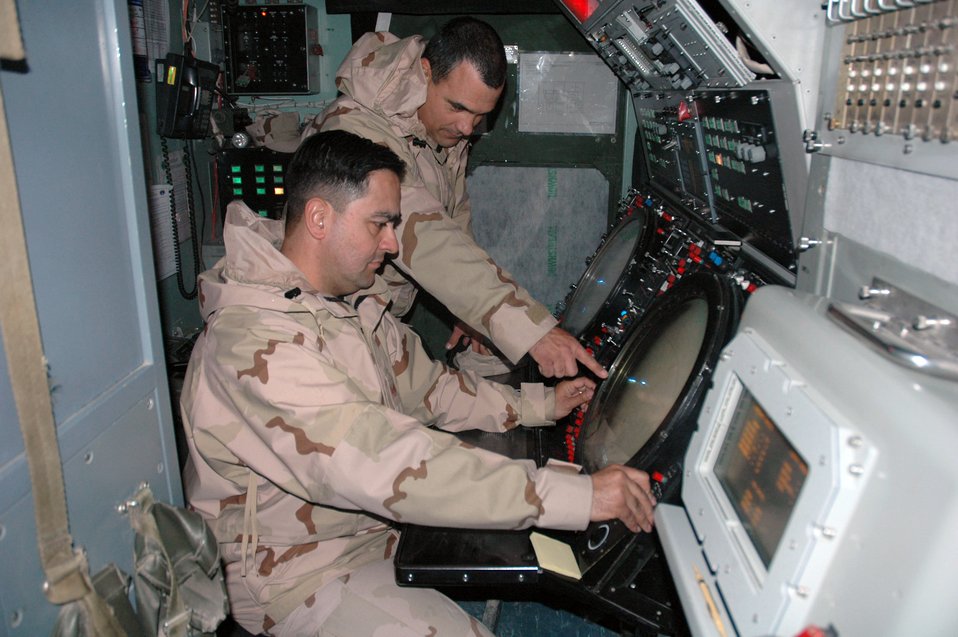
Kingpins use blend of old, new technology

Staff Sgts. Luis Nazario and Jose Saavedra ensure radar is working properly at Kirkuk Air Base, Iraq. The Airmen perform maintenance checks on the unmanned radar twice daily.